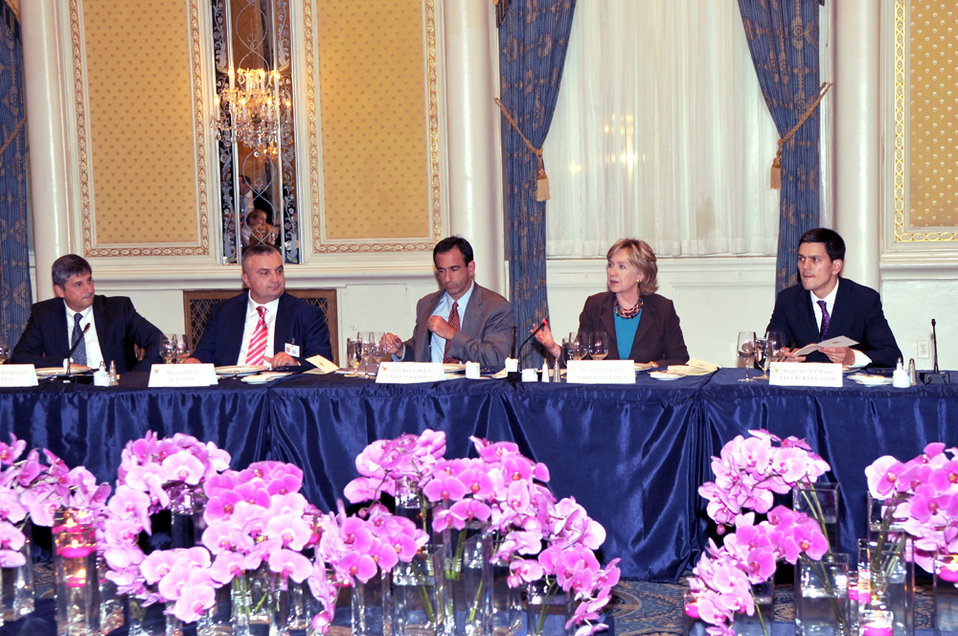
UNGA 2009: Secretary Clinton Hosts Transatlantic Dinner With EU and NATO Foreign Ministers

U.S. Secretary of State Hillary Rodham Clinton hosts a transatlantic dinner with EU and NATO Foreign Ministers at the Waldorf Astoria hotel during the 64th Session of the UN General Assembly in New York City, New York September 22, 2009.